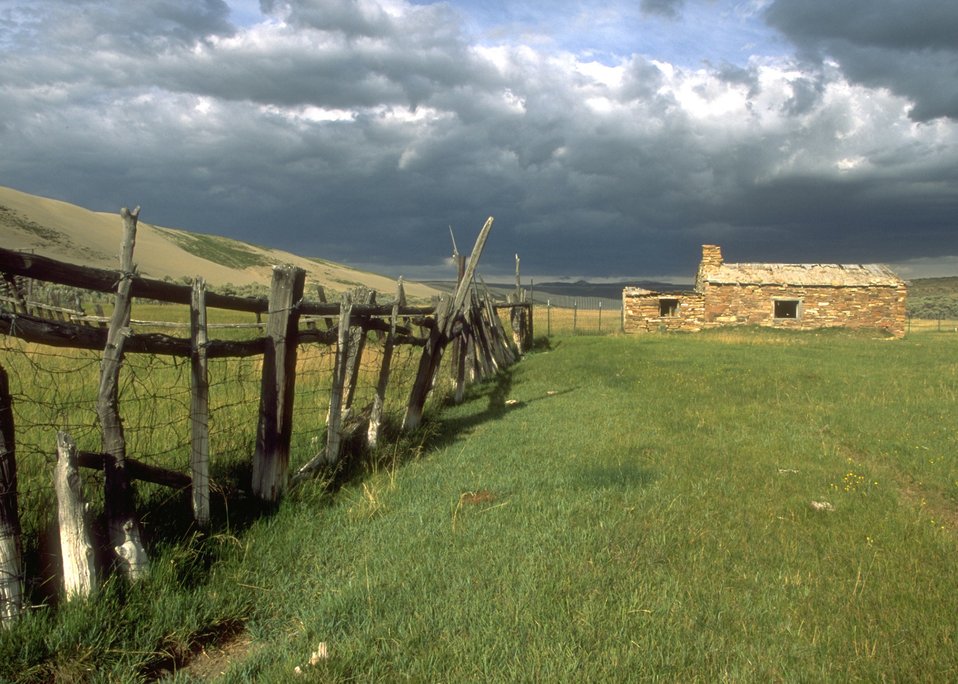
Historic Crookston Ranch near OHV Sand Dunes Area, Rock Springs Field Office.